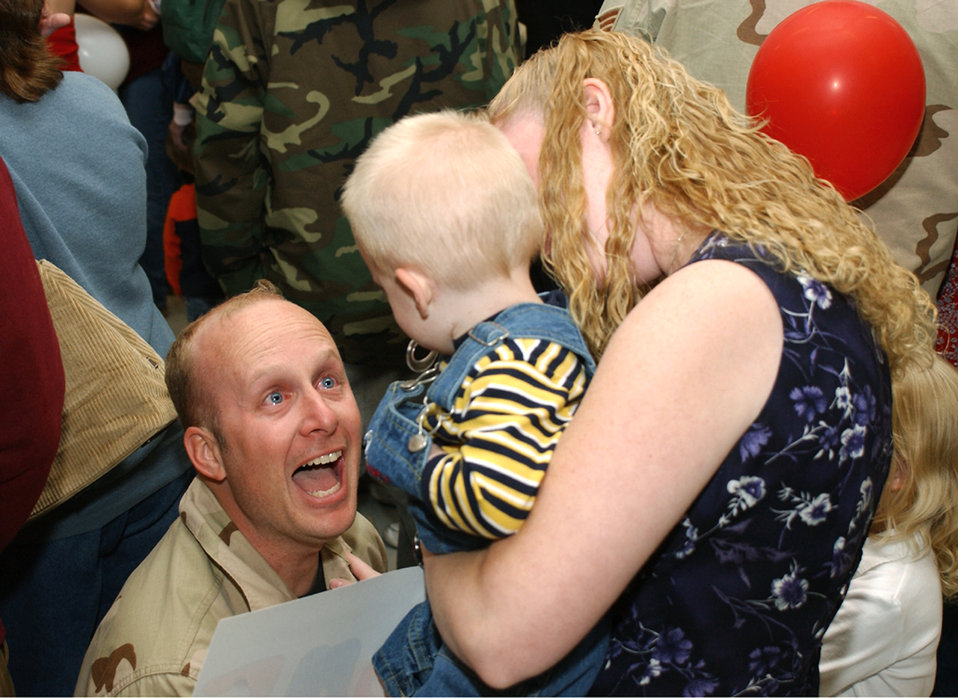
I'm back!

EIELSON AIR FORCE BASE, Alaska -- Staff Sgt. Jason Miller is welcomed home by his family during a homecoming ceremony here Sept. 15. Sergeant Miller deployed to Bagram Air Base, Afghanistan, for six months, and he is assigned to the 354th Maintenance Squadron.